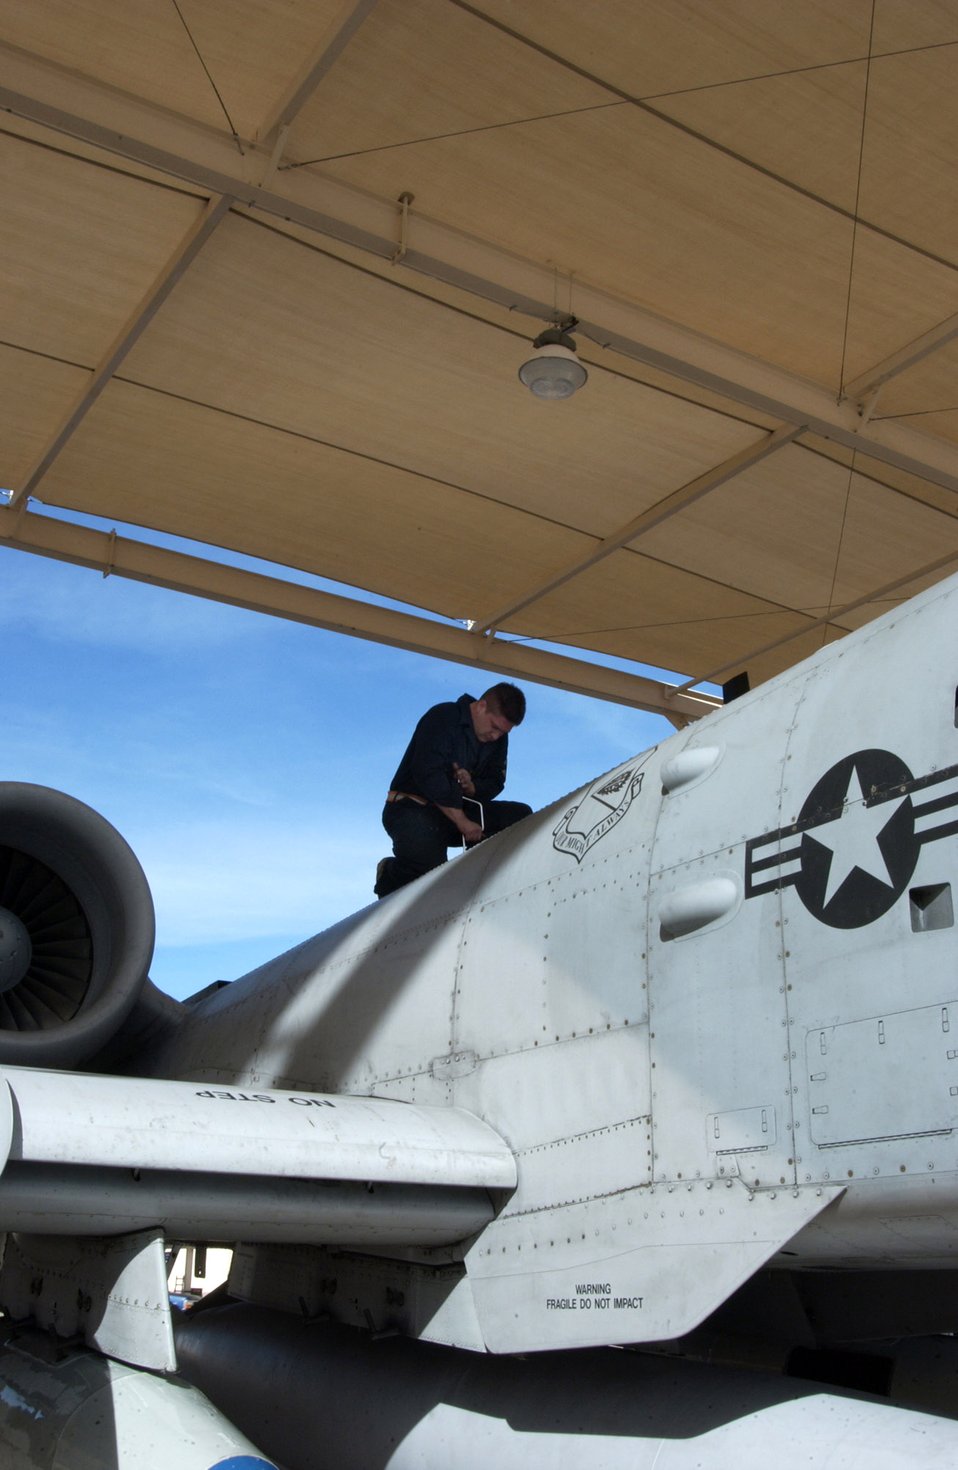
This A-10's getting ready to roll

Staff Sergeant Astolfo Mercado closes a panel on an A-10 Thunderbolt II Oct. 28 on the flightline of Davis-Monthan Air Force Base, Ariz. Sergeant Mercado is a crew chief from the 355th Aircraft Maintenance Squadron.